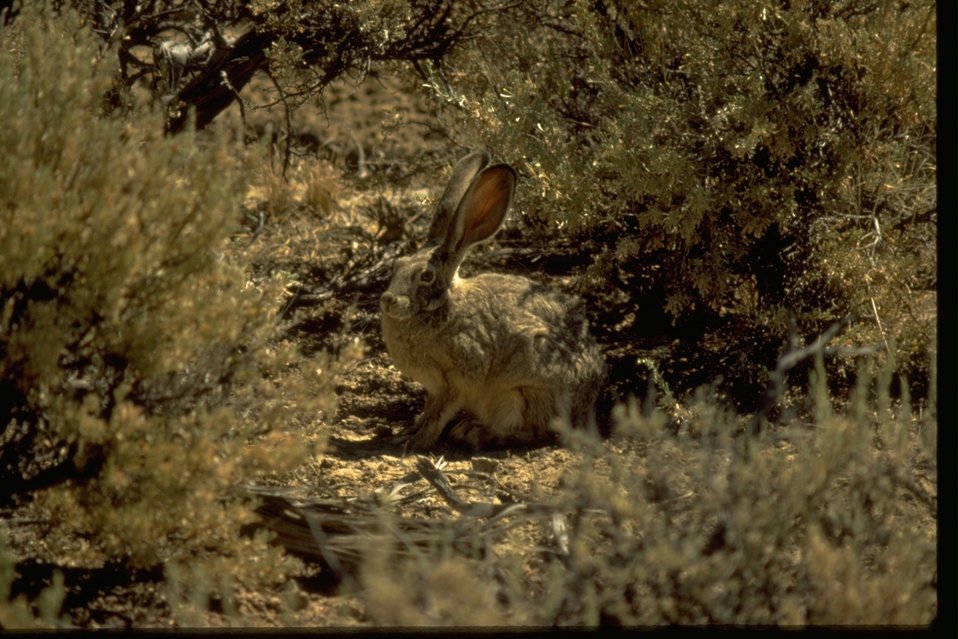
Black-tail Jackrabbit standing in sagebrush.